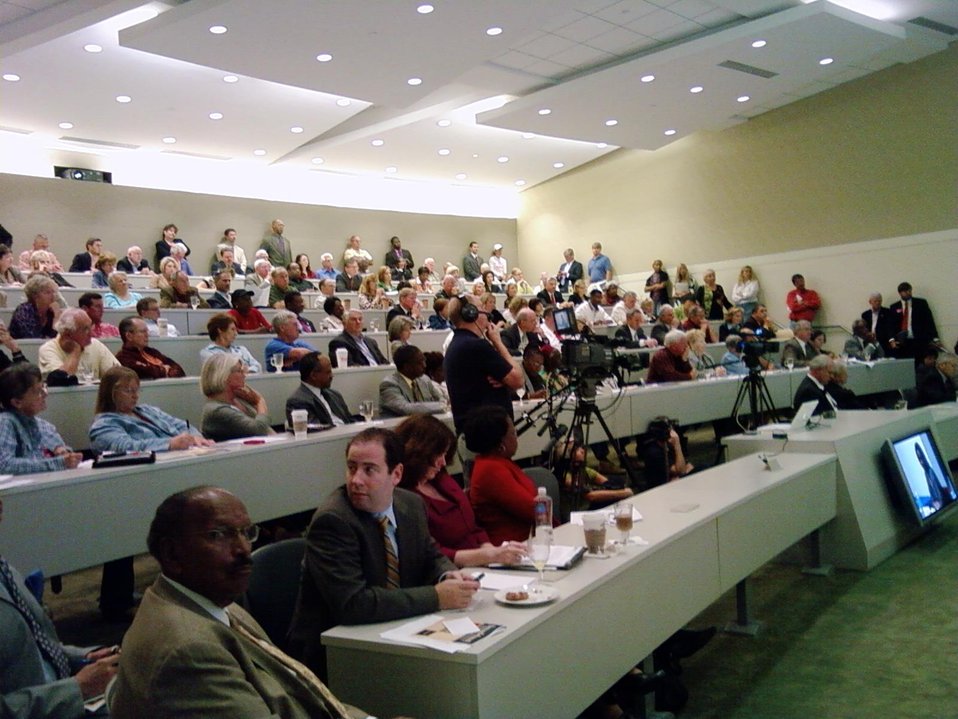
Field Hearing on Broadband Adoption 10-6-09